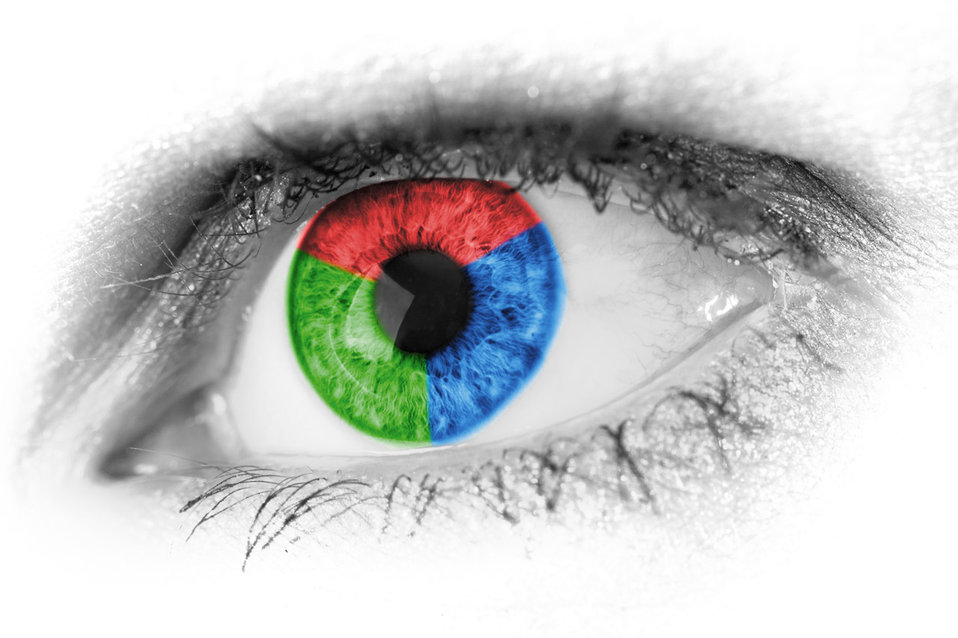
Red green and blue eye

Primary rgb colors expressed using a human eye.